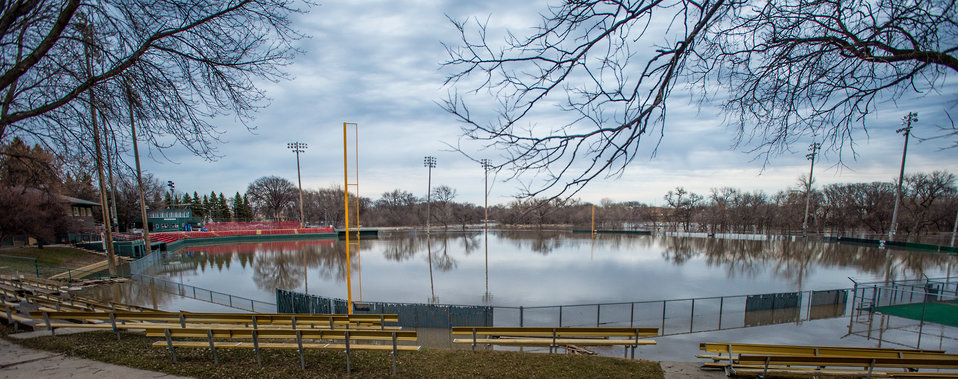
View of Jack Williams Stadium facility in Mickelson Field, with Red River flood waters, at 11th Ave. N. and Elm St. in Fargo, N.D. on Monday, Apr. 29, 2013. To learn about the Red River Basin Initiative, see www.mn.nrcs.usda.gov/news/features13/RRBI.html.